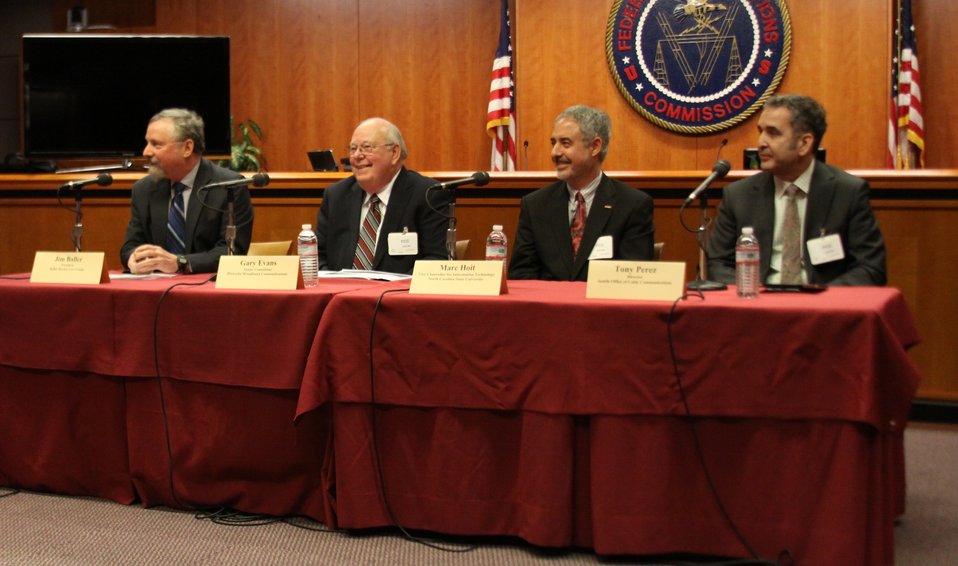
March 27, 2013 Gigabit City Challenge: Broadband Networks Workshop Panel 2: Becoming A Gigabit Community